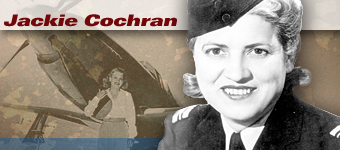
Operation Coronet Cove history spotlight graphic .